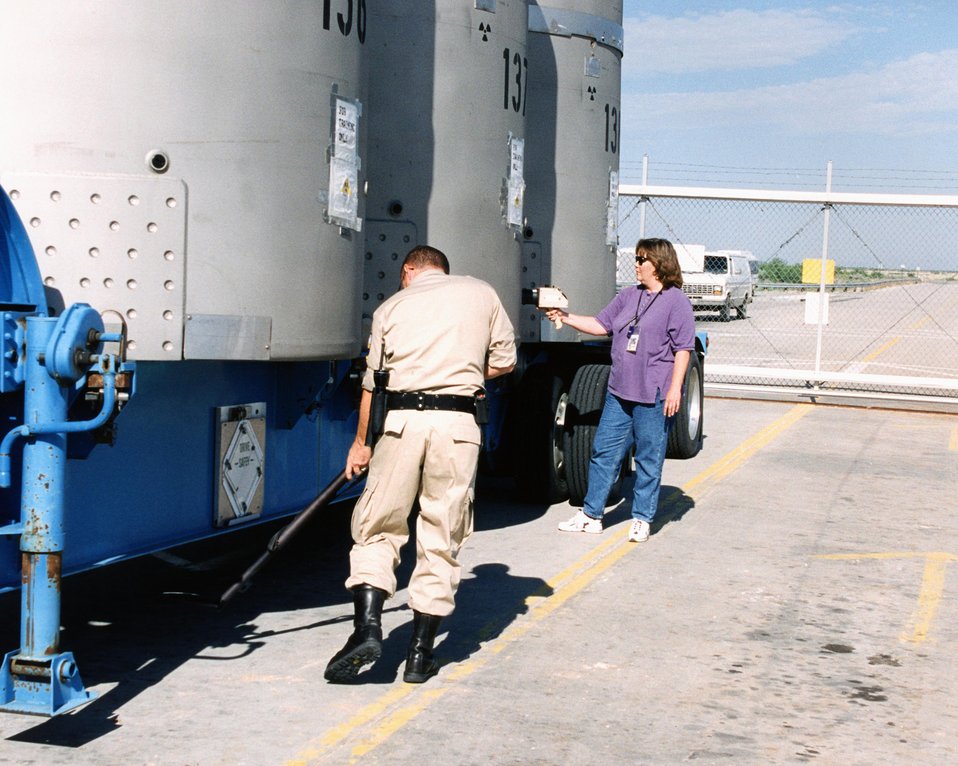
AN INCOMING TRUPACT-II CHECKED FOR RADIATION CONTAMINATION.

ALL INCOMING TRANSURANIC PACKAGE TRANSPORTERS (TRUPACT-II) ARE CHECKED FOR SECURITY AND MONITORED FOR DOSE RATE BEFORE ENTERING DOE'S WASTE ISOLATION PILOT PLANT.